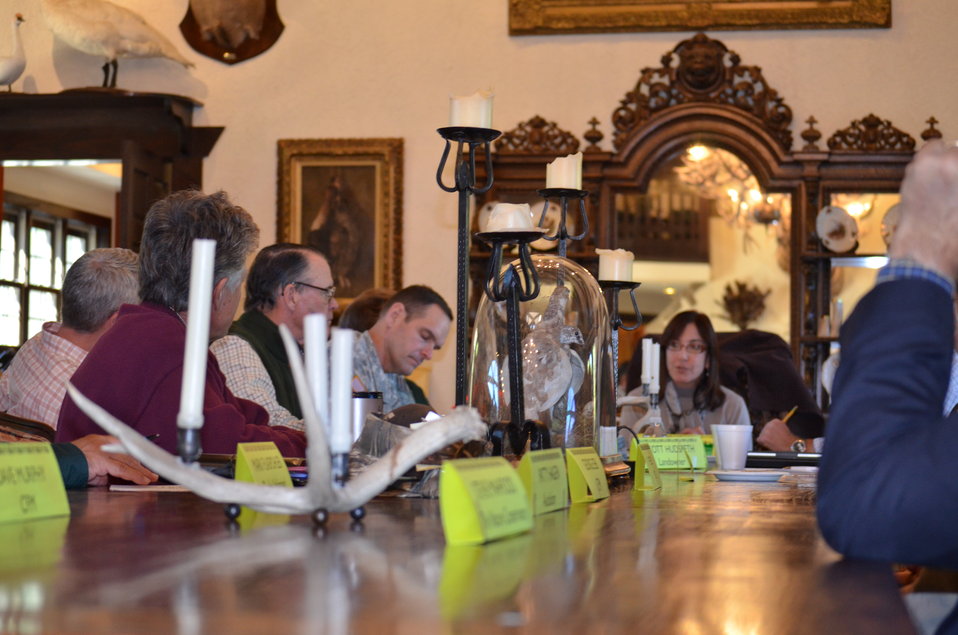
Taking notes

Roundtable discussion with Acting Asst. Secretary at Raccoon Ranch. USFWS/Ashley Spratt